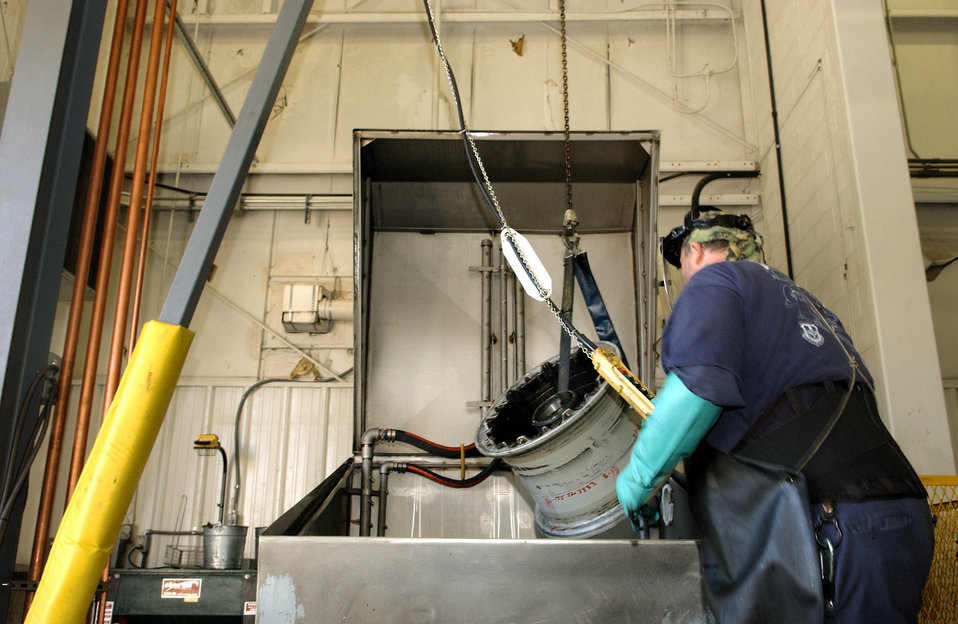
Altus shop improvement reuses waste water

Kent Reitenour prepares a KC-135 Stratotanker wheel to be cleaned in an automated wheel washer. After the washing tire, the hazardous waste material is piped to a newly implemented environmentally friendly waste water treatment system. The system has reduced the amount of exported waste from more than 27,000 pounds to less than 10 pounds annually. The water cleaning system uses bio media to consume the hazardous waste, which in turn creates a reusable supply of cleaning water. The new system will save the 97th Air Mobility Wing more than $47,500 per year. Mr. Reitenour is a 97th Maintenance Directorate wheel and tire shop mechanic.